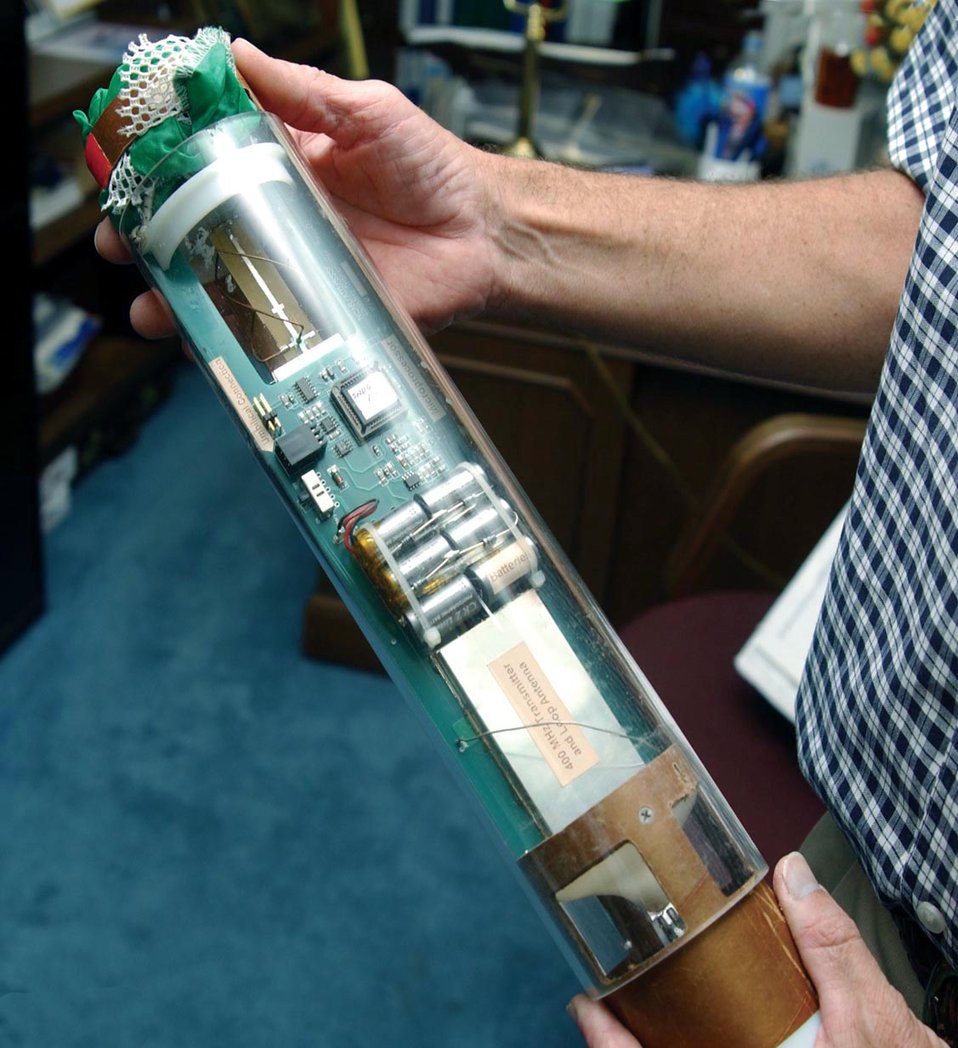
Dropsonde

MACDILL AIR FORCE BASE, Fla. -- This dropsonde is one of the key tools National Oceanic Atmospheric Administration officials use to measure temperature, humidity, and most importantly, barometric pressure inside a hurricane. The crew of the WP-3D Orion, can drop as many as 60 dropsondes during a flight from here.